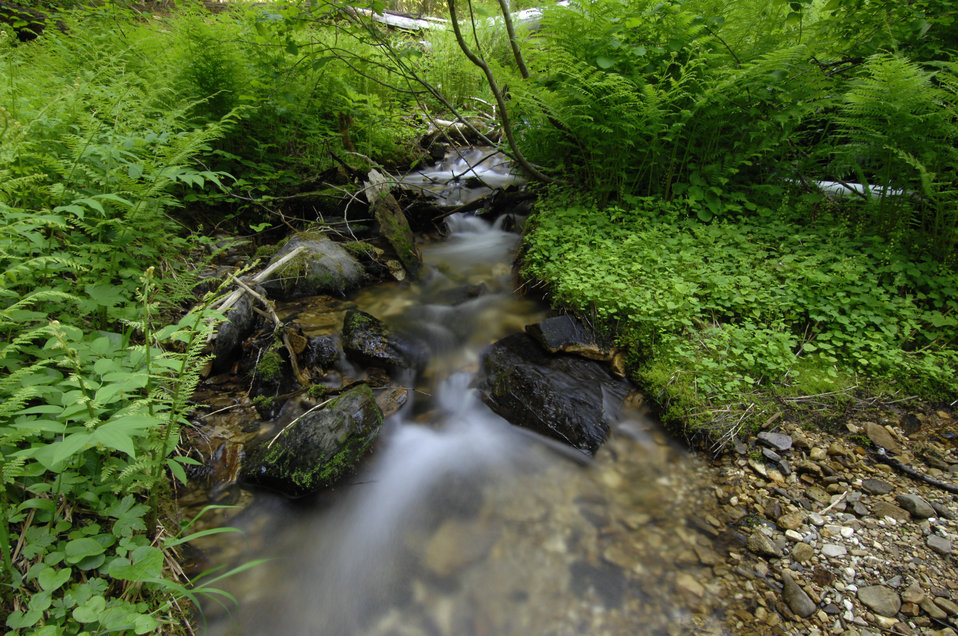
A stream located near Moscow, Idaho on July 9, 2008.